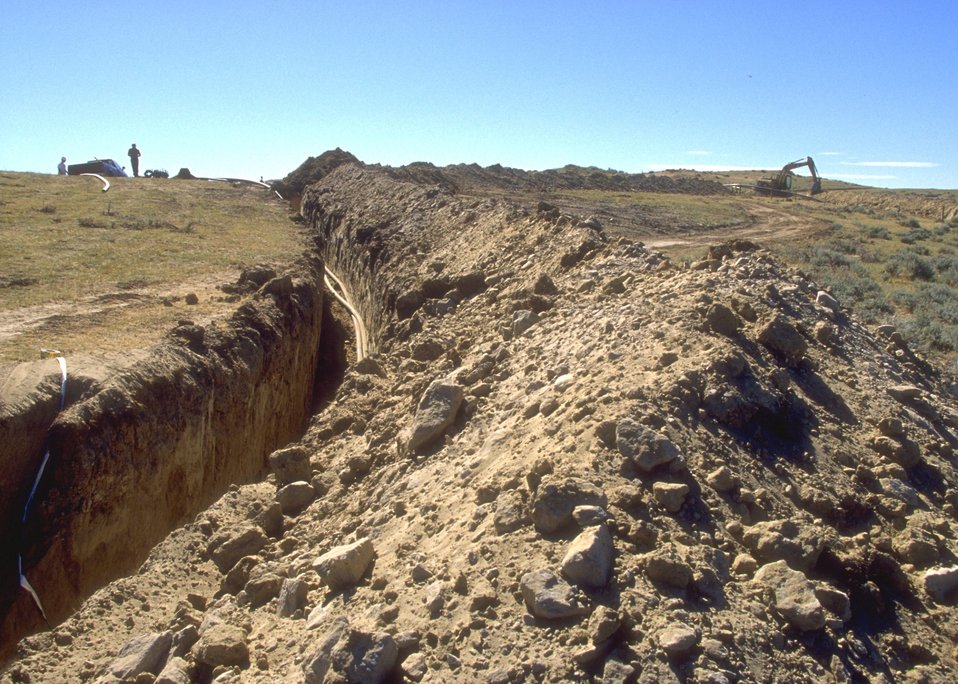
Construction for coal bed methane development, Buffalo Field Office.